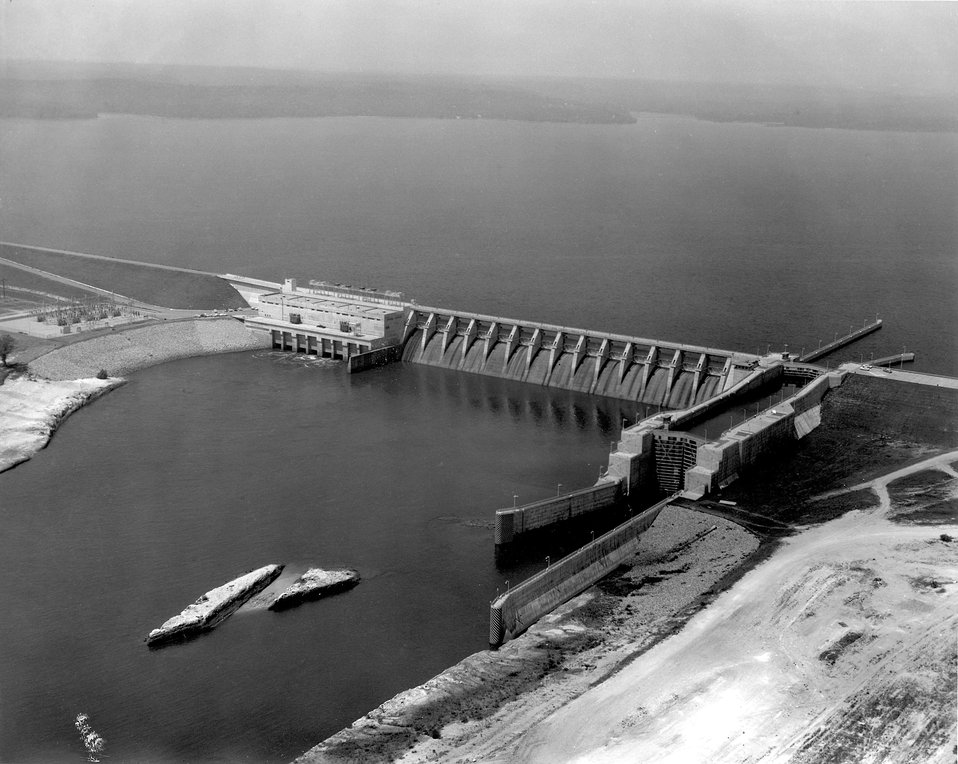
Walter F. George Powerhouse, Lock & Dam. c. undated